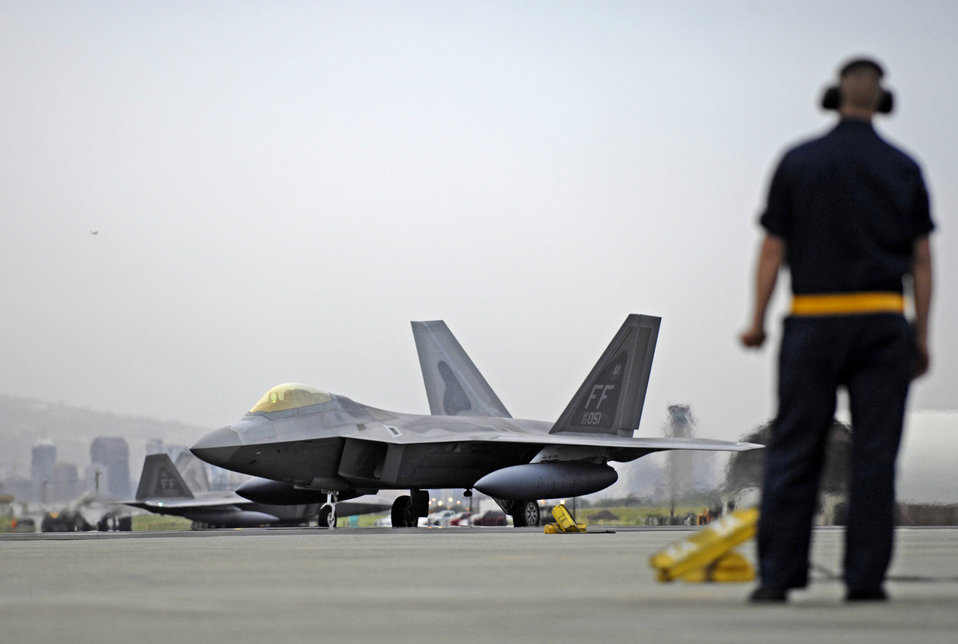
F-22 begins first overseas deployment

A crew chief waits to marshal a F-22 Raptor to its parking spot Feb. 7 at Hickam Air Force Base, Hawaii. The F-22s and more than 250 Airmen from the 27th Fighter Squadron at Langley Air Force Base, Va., are bound for Kadena Air Base, Japan, for the aircraft's first overseas operational deployment.